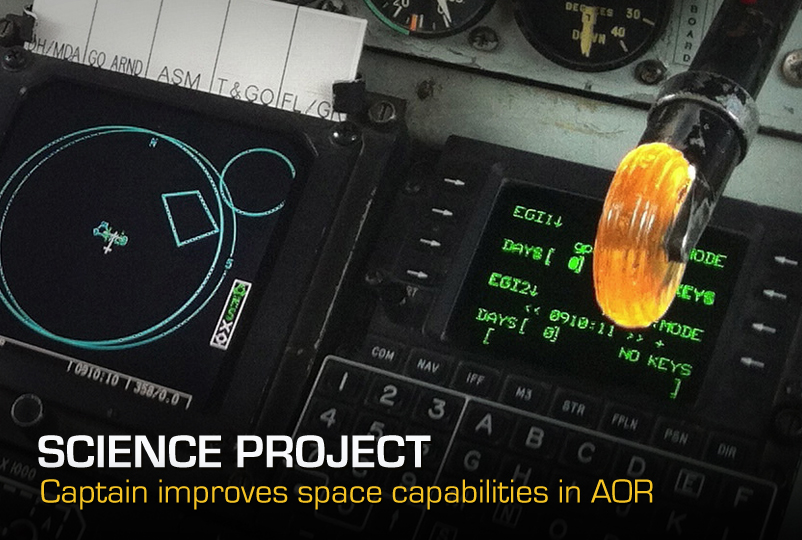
Science Project